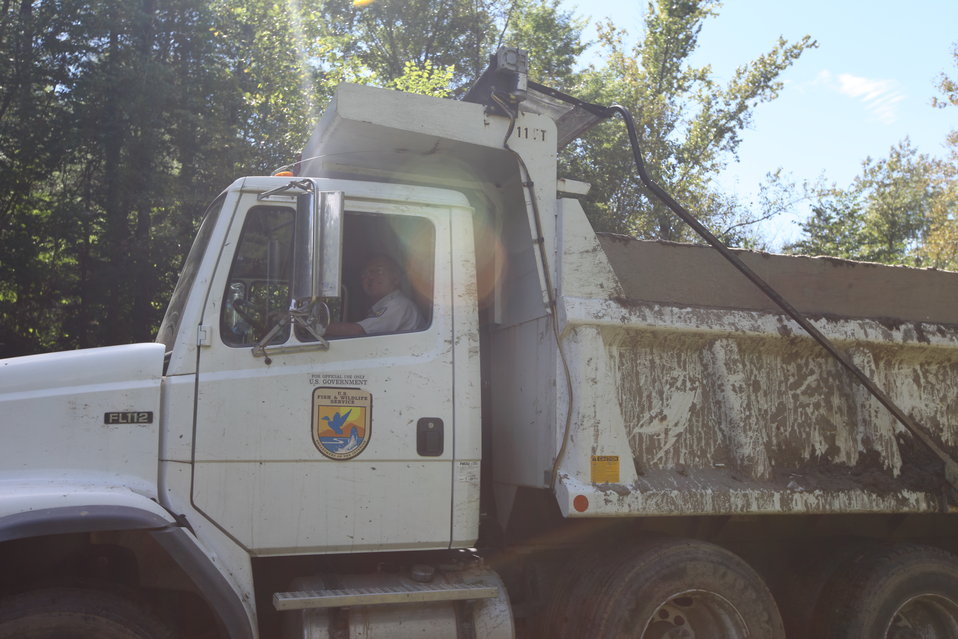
Storm damage relief at White River NFH

Heavy equipment operators came from other USFWS stations to help clean up.